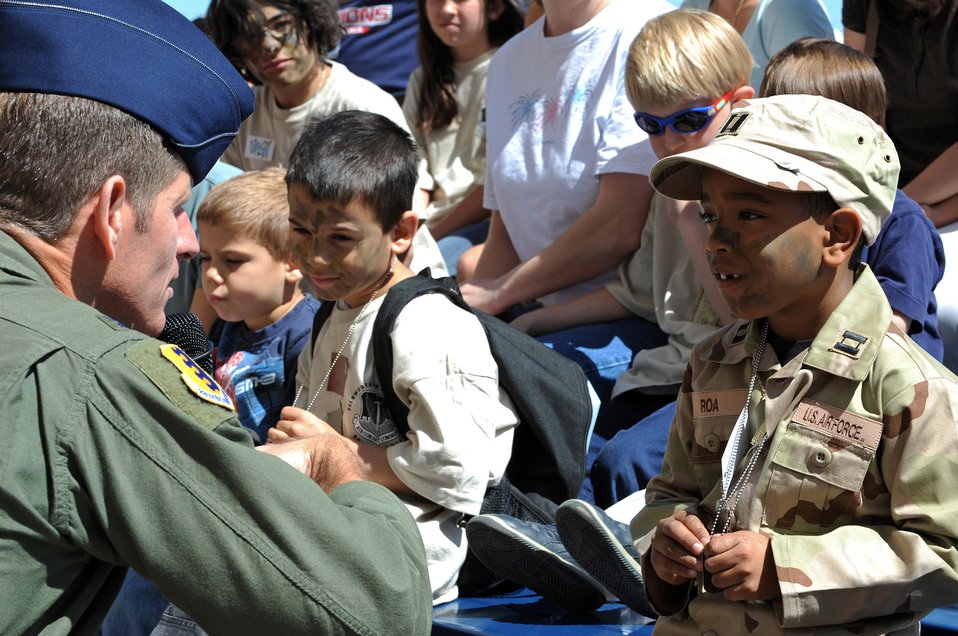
I've got my ID tags, I'm ready!

Javiel Roa, son of Tech. Sgt. Karian Roa, talks with Col. Peter Castor, 28th Bomb Wing vice commander, May 31 during Operation Awareness 2008 on Ellsworth Air Force Base, S.D. The event allowed children to see how their parents prepare for deployment.